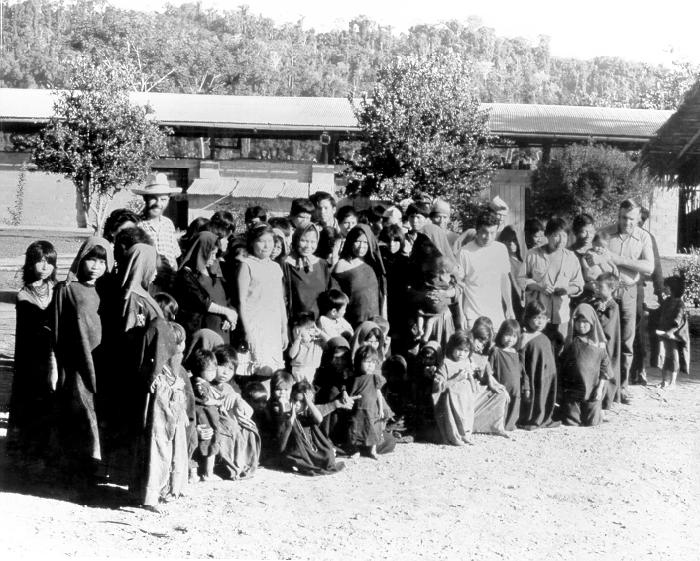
This was a group of Campas, a former wanderer tribe, who were being investigated at the time for hyperendemic malaria.